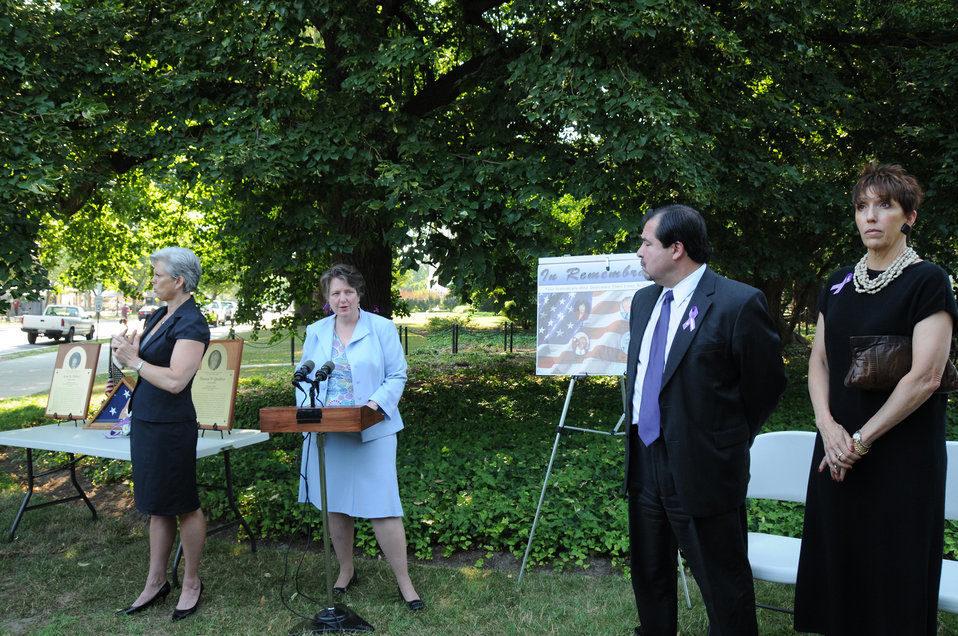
Deputy Secretary of Agriculture Kathleen Merrigan makes remarks at a ceremony to honor slain Food Safety Inspection Service Compliance Officers Jean Hillery and Thomas Quadros who were gunned down in the line of duty while inspecting a processing plant in CA. The event took place at the U.S. Department of Agriculture in Washington, DC, on Monday June 21, 2010. USDA Photo 10di1413-0040.